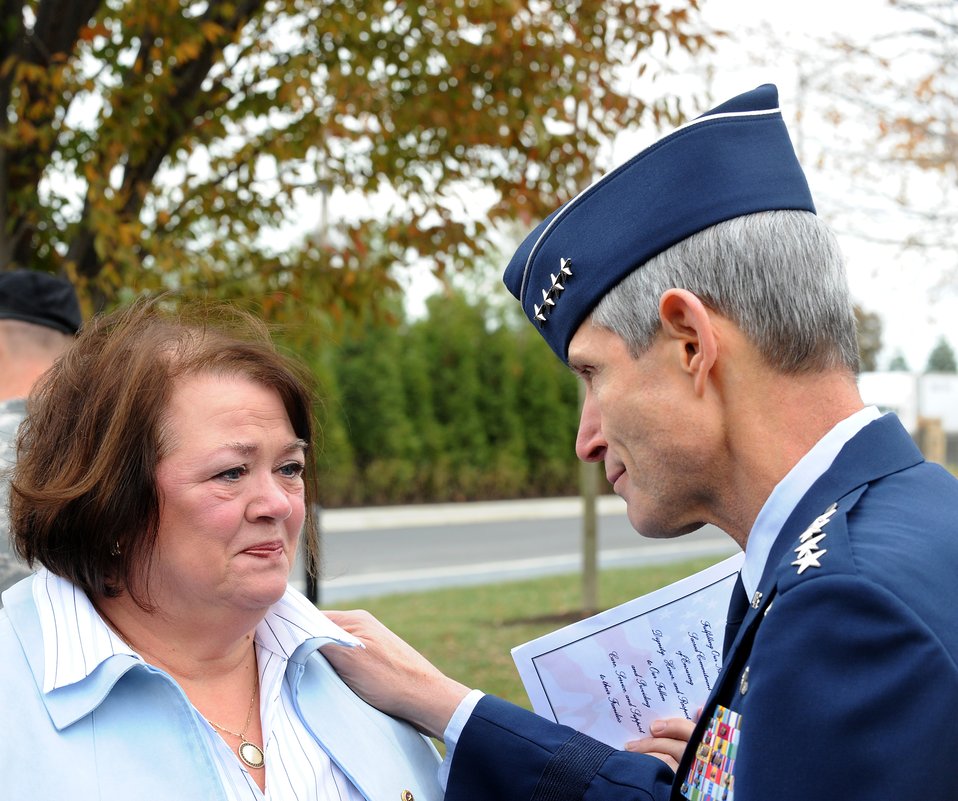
Dover AFB Fisher House Dedication

Air Force Chief of Staff Gen. Norton Schwartz consoles Judy Faunce of Wilmington, Del., following a dedication ceremony of the Fisher House for Families of the Fallen on Nov. 10, 2010, at Dover Air Force Base, Del. Mrs. Faunce is the mother of U.S. Army Capt. Brian Faunce, who was killed in service in 2003. The Fisher House Foundation built the 50th Fisher House at Dover to support families visiting the base for dignified transfers of their loved ones.